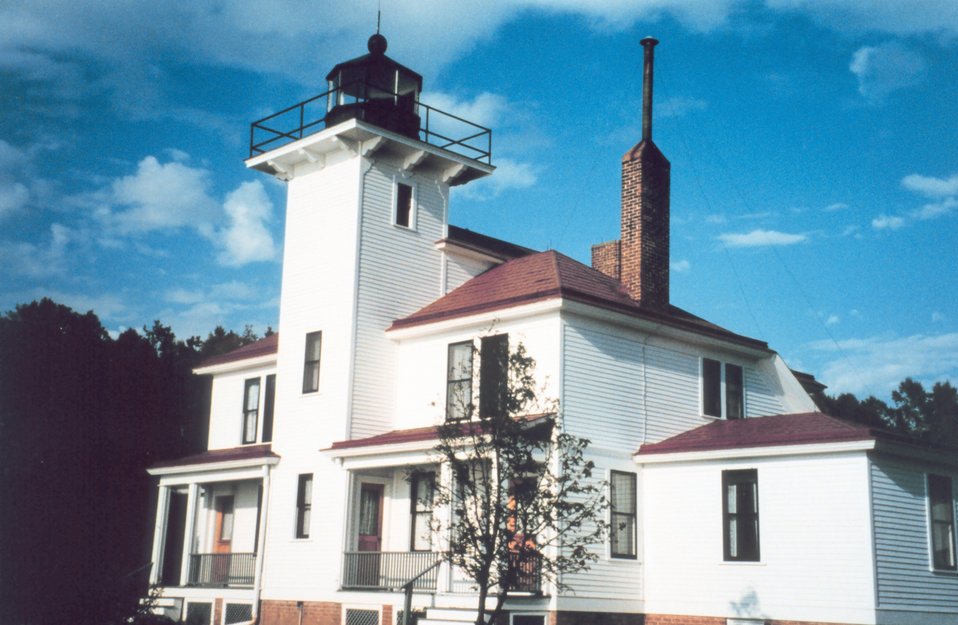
Raspberry Island Lighthouse